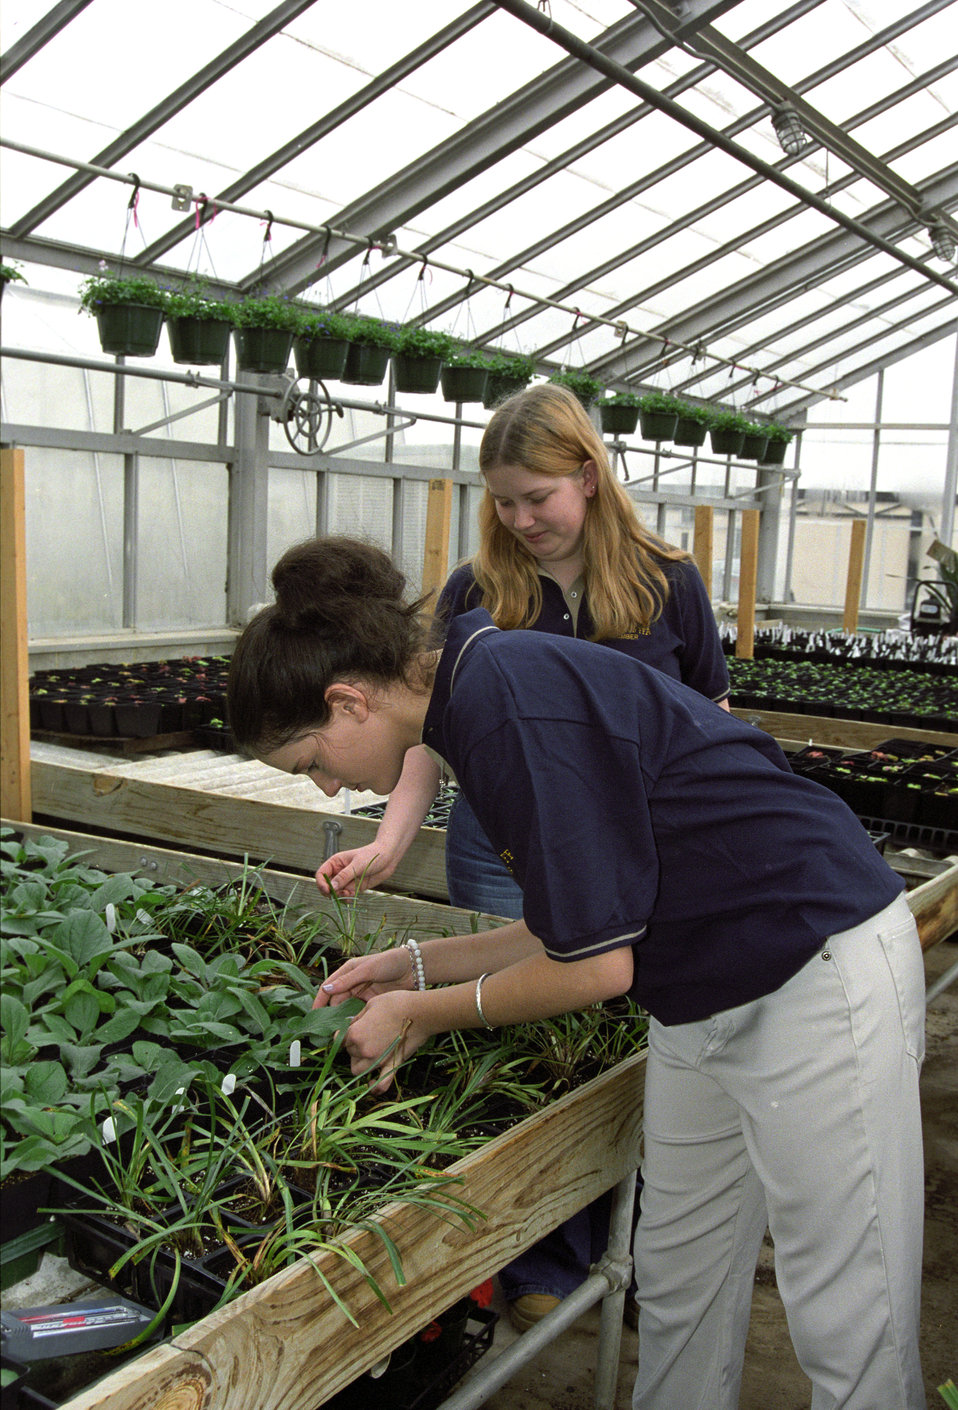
FFA students at Damascus High School work in the school’s greenhouse as part of the U.S. Department of Agriculture’s (USDA) National Institute of Food and Agriculture’s (NIFA) Agriculture in the Classroom Program (AITC) in Damascus, MD on March 21, 2003. Agriculture and education have been related for much of our nation's history because most Americans lived on farms or in small towns, students often did farm chores before and after school. Old schoolbooks have numerous agricultural references. As the farming population began to decline, agricultural emphasis decreased in educational materials as well. A core group of educators and agriculturalists pushed for more youth education about agriculture. They recognized the interlocking role of farming, food and fiber production, nutrition, environmental quality, wildlife habitat, clean water, and preservation of forests.